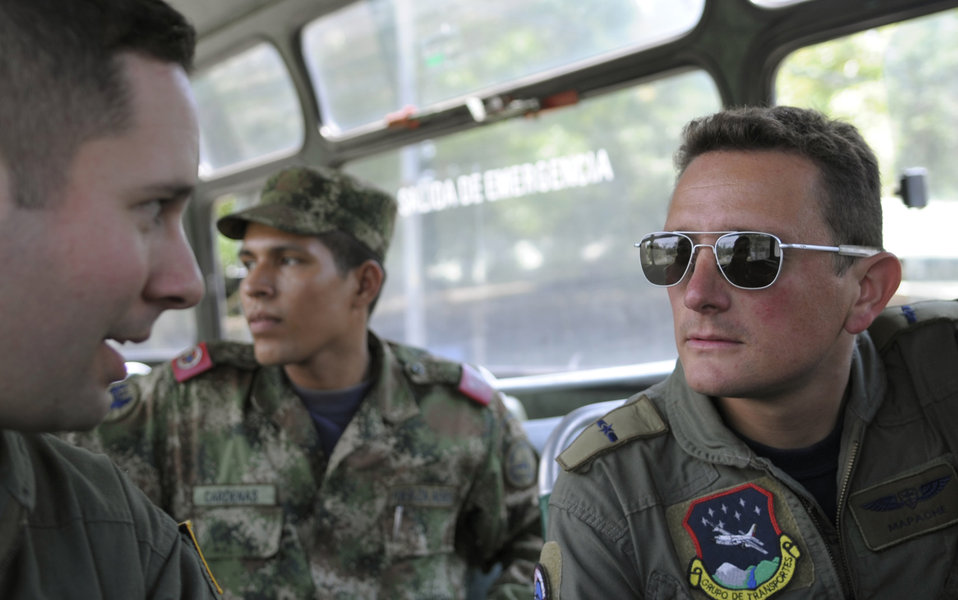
Rescue Airmen exchange knowledge, build partnerships with Colombian airmen

Mayor (Maj.) Eduardo 'Mapache' Restrepo, (right), talks to Capt. Ramon Fierros about the day's upcoming mission while riding a bus to a crew brief Sept. 16, 2010, at Palanquero Air Base, Colombia. Major Restrepo is a Colombian air force C-130 Hercules co-pilot. Captain Fierros is a C-130 navigator.